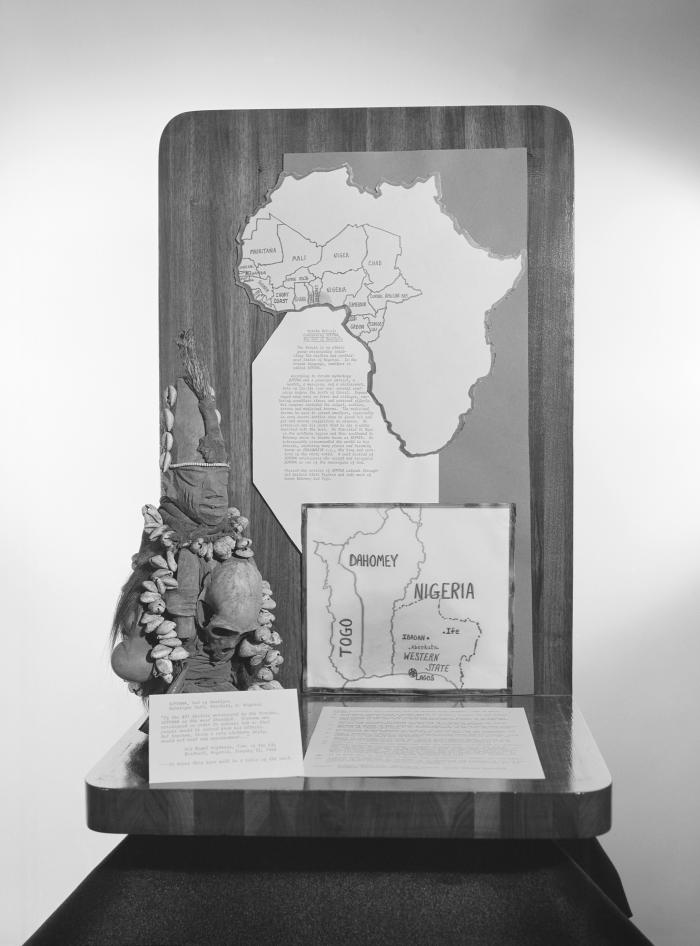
This 1968 photograph depicted a map of Western Africa and the coastal nations surrounding Nigeria, a description of the Yoruban beliefs concerning Shapona, the deity of smallpox who is considered the intermediary between man and God, and a votif sculpture representing Shapona.